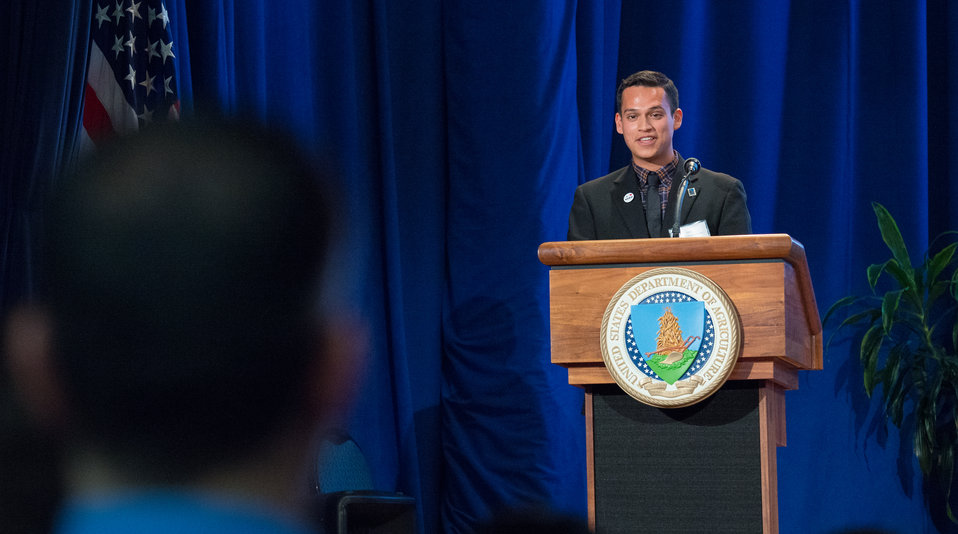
Iowa State University Student Brian Castro presents his work to help achieve Dr. Borlaug’s vision as the next generation of hunger fighters, at the Borlaug Symposium commemorating the late Dr. Norman E. Borlaug's 100th Birthday hosted by the U.S. Department of Agriculture (USDA) in the Jefferson Auditorium of USDA, in Washington, D.C. on Tuesday, Mar. 25, 2014. The symposium will highlight current efforts addressing global hunger. The symposium panels will feature high school and university students, as well as, scientists and policy advisors at U.S. Agency for International Development (USAID), USDA and NGOs. Questions from students and interns are given priority to panelists. Lightening presentations will have leading students and individuals present what they are doing to help achieve Dr. Borlaug’s vision of creating the next generation of hunger fighters.
The symposium was planned in partnership with: U.S. Agency for International Development (USAID), Cornell University, Iowa State University, University of Minnesota, The Norman Borlaug Institute for International Agriculture, Texas A and M University, and the World Food Prize.